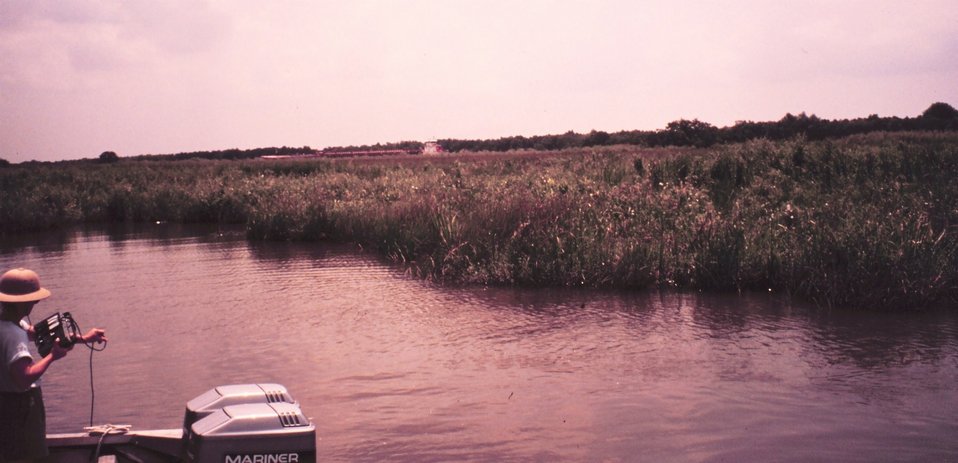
Fresh water marsh adjacent to Gulf Intracoastal Waterway. Note push boat and barge in background.